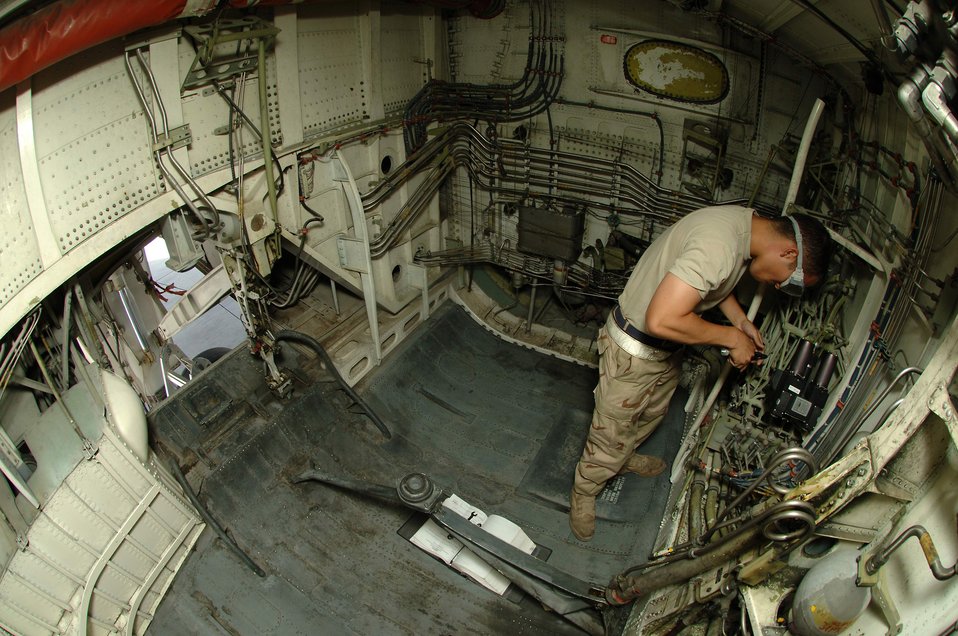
Airmen expand Air Force global reach with KC-10s

Senior Airman Jay Barros removes a flap limit actuator from a KC-10 Extender March 27 at a base in Southwest Asia. Providing 6.5 million pounds of jet fuel weekly, the KC-10 and the Airmen of the 380th Air Expeditionary Wing who support it give global reach to U.S. and coalition aircraft supporting operations Enduring Freedom and Iraqi Freedom. Airman Barros is a 380th Expeditionary Aircraft Maintenance Squadron hydraulics specialist.